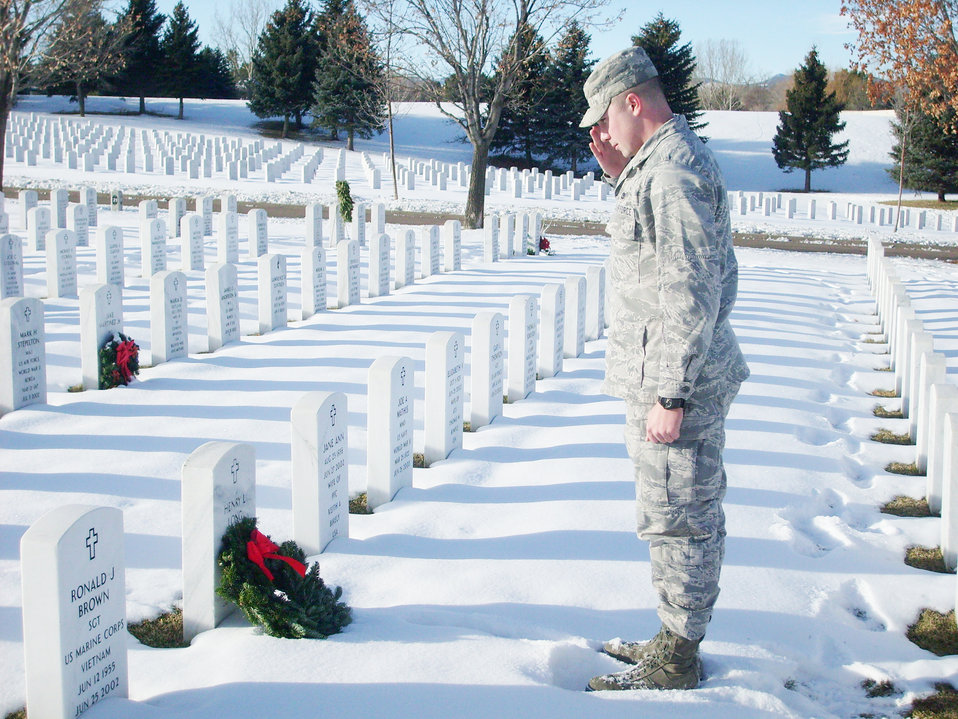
Volunteers honor veterans with wreaths

1st Lt. Brandon Goebel salutes after placing a wreath on the grave of Navy Seaman Apprentice Henry L. Long at the Fort Logan National Cemetery, Colo., Dec. 14, 2009. At the request of the family, he placed the wreath on Seaman's Long grave.